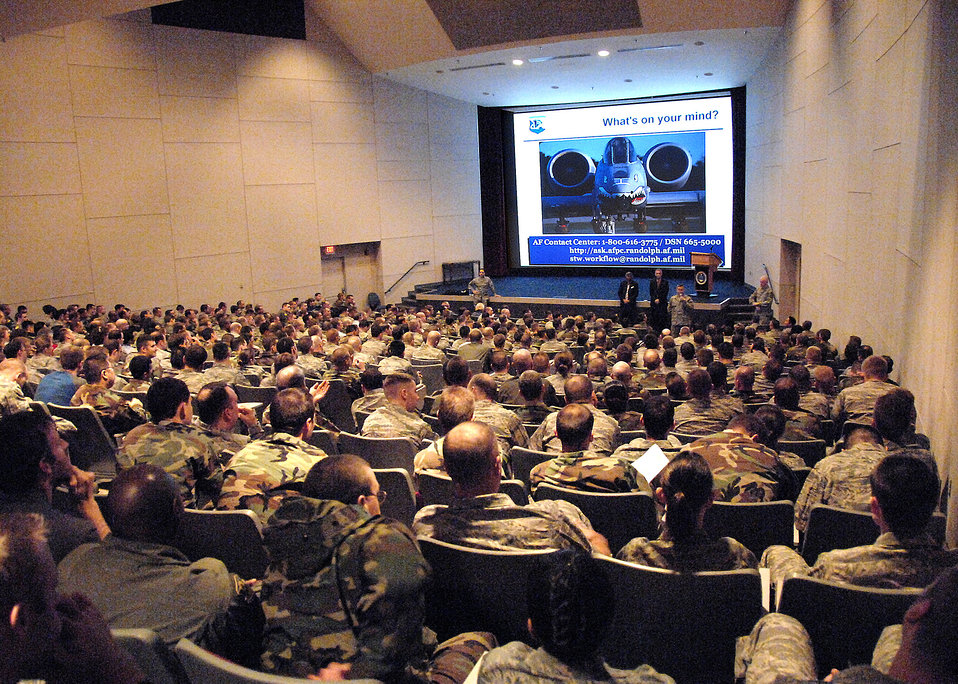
Spread the Word team visit

The Air Force Personnel Center